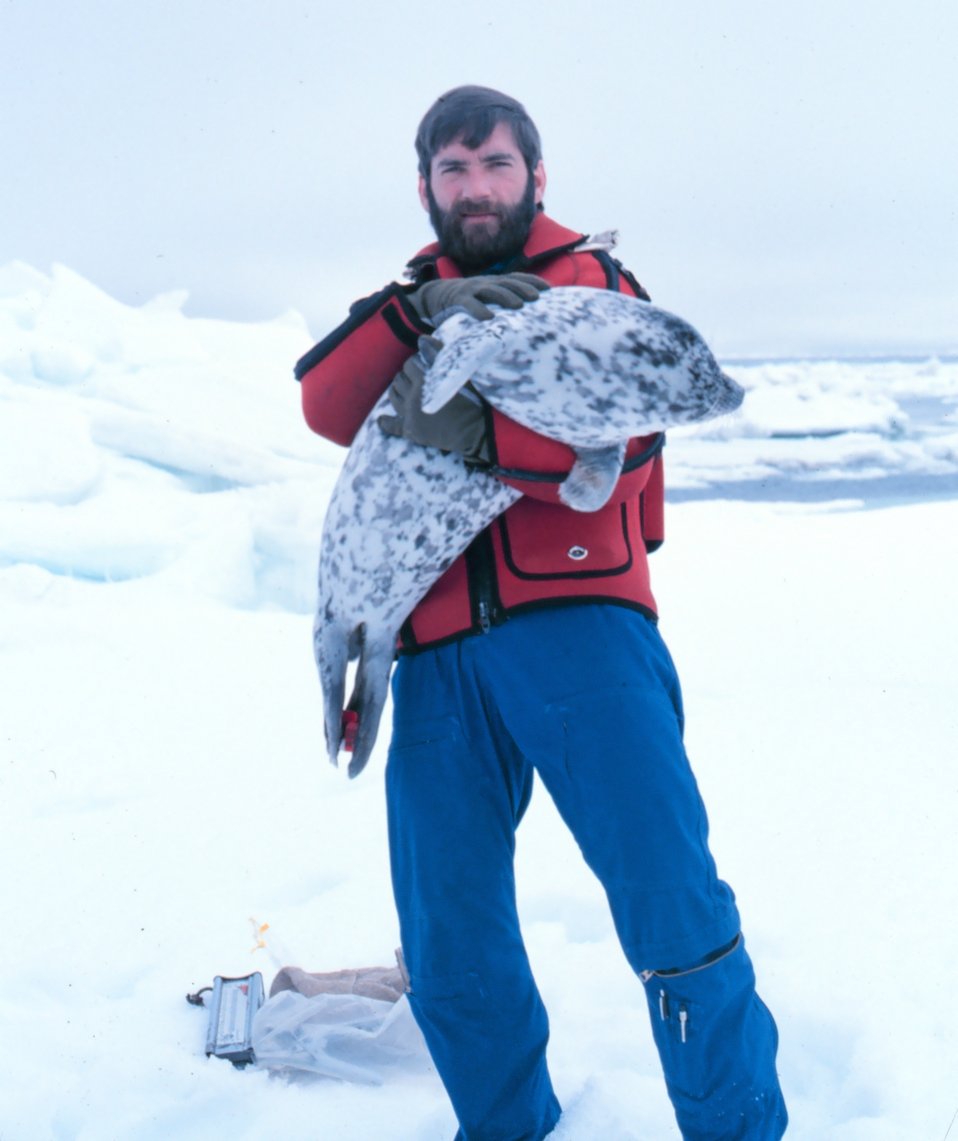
Budd Christman and a new friend - spotted seal - Phoca largha.